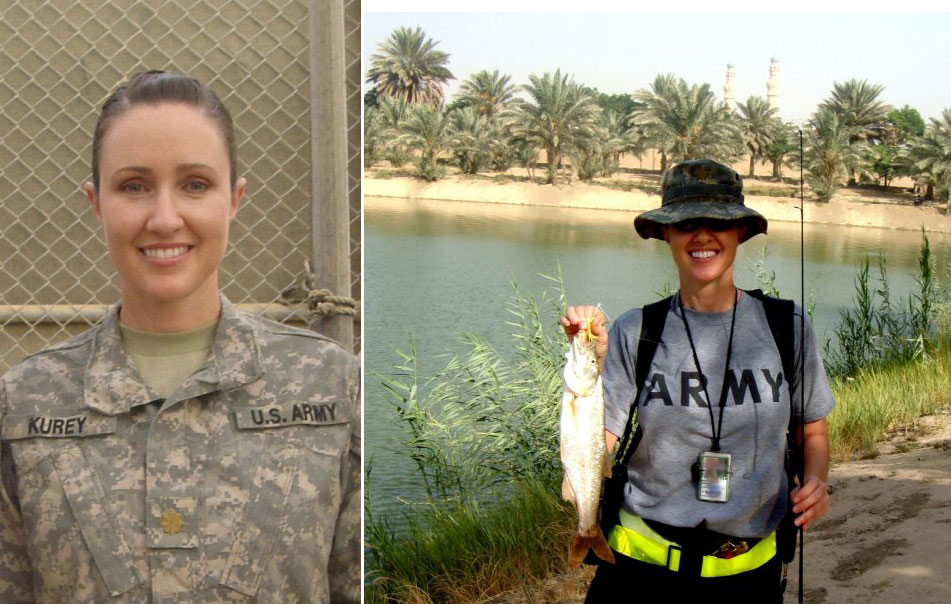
Tamara Kurey is a Special Agent with the Fish and Wildlife Service and a Major with the Army Reserves. Combined with active duty of 12 years and her time as a reservist, Kurey has 22 years of Military Service. She enlisted after high school and was deployed to South Korea for 13 months specializing in military intelligence. Her long military career has enabled her to continue to move up in rank and has also taken her to Germany and Iraq. During a break from active duty, Kurey gained an ROTC scholarship and pursued a degree in Wildlife and Fisheries Science. Kurey first accepted a position with the FWS in 2008, and was immediately deployed to Iraq as a Company Commander. She began working for the FWS in 2009 as a Special Agent in Rio Rico, Arizona.